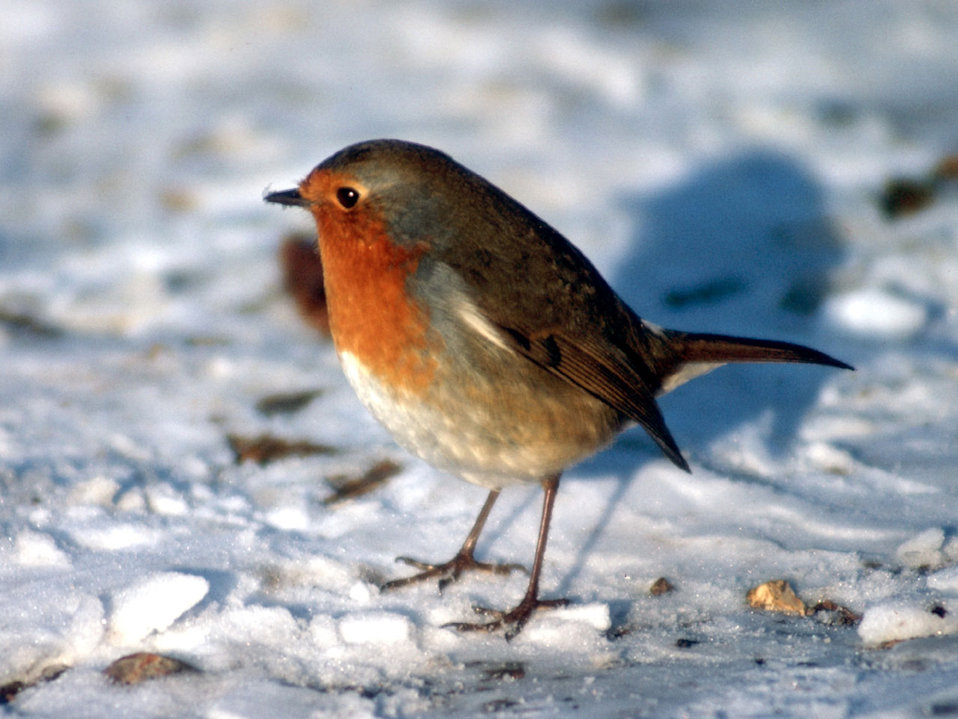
Robin in the snow

Little robin in the snow.